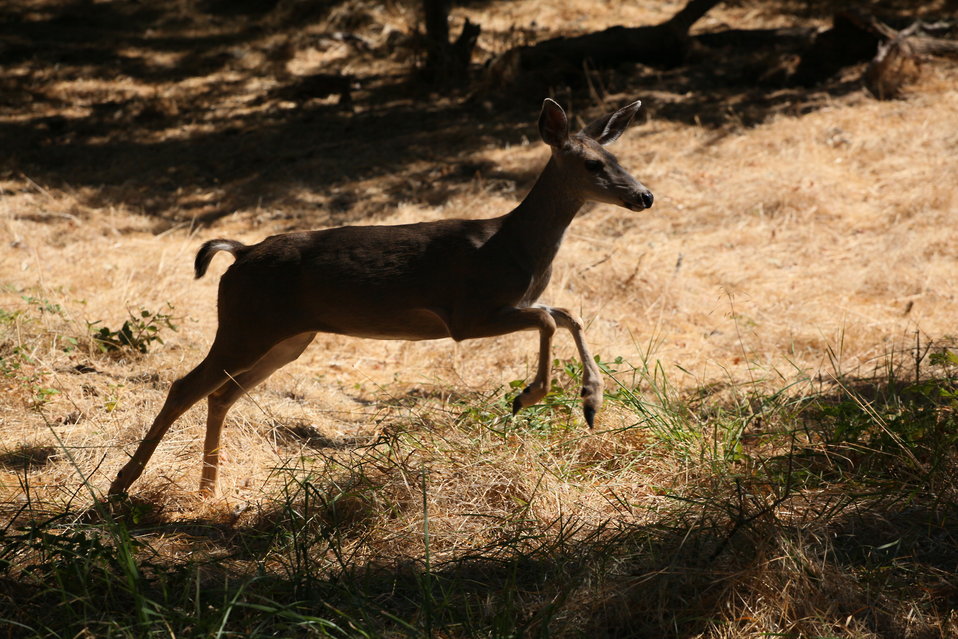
America’s Great Outdoors event at the Effie Yeaw Nature Center

A mule deer provides a living lesson about the natural world for students from Maple Elementary School visiting the Effie Yeaw Nature Center in Carmichael, Calif., Sept. 27, 2011. The students enjoyed nature walks and outdoor education activities with U.S. Army Corps of Engineers park rangers and leaders as part of an America’s Great Outdoors event with Jo-Ellen Darcy, Assistant Secretary of the Army for Civil Works, and U.S. Rep. Doris Matsui. The event was in support of President Barack Obama’s America’s Great Outdoors Initiative, established in April 2010, to reconnect the American people with the outdoors.